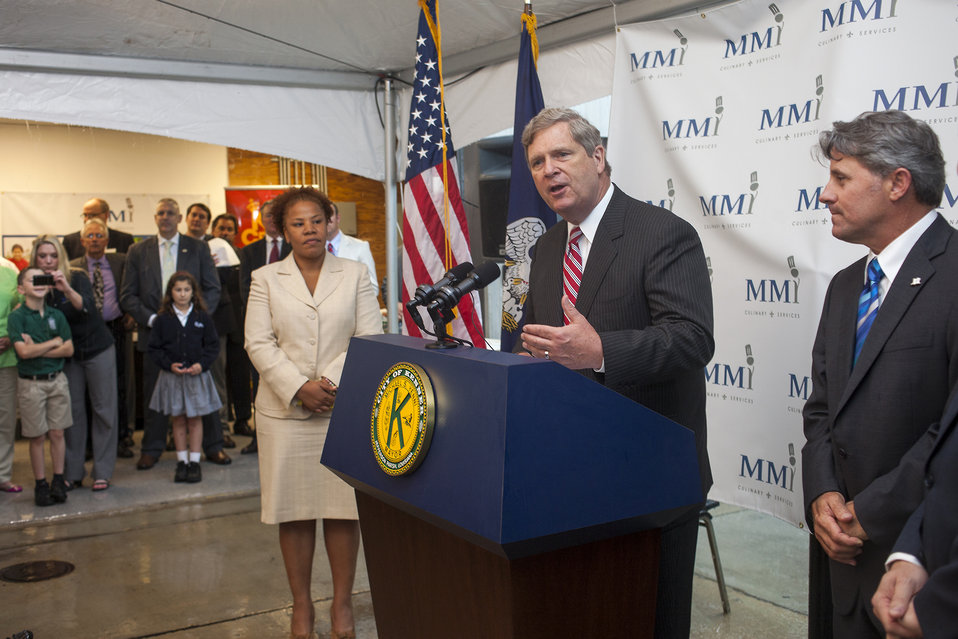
Secretary of Agriculture Tom Vilsack makes remarks on his visit to MMI, Inc., on Wednesday, May 1, 2013, in Kenner, LA. The President of MMI, Inc, right, credits the U.S. Department of Agriculture (USDA) for their support on his innovative venture in food manufacturing. Thier proprietary soups, sauces, gravies, marinades, dressings, sides, entrees, and desserts are sold to national restaurant chains, retail outlets, and large foodservice venues, including healthy school lunch programs.